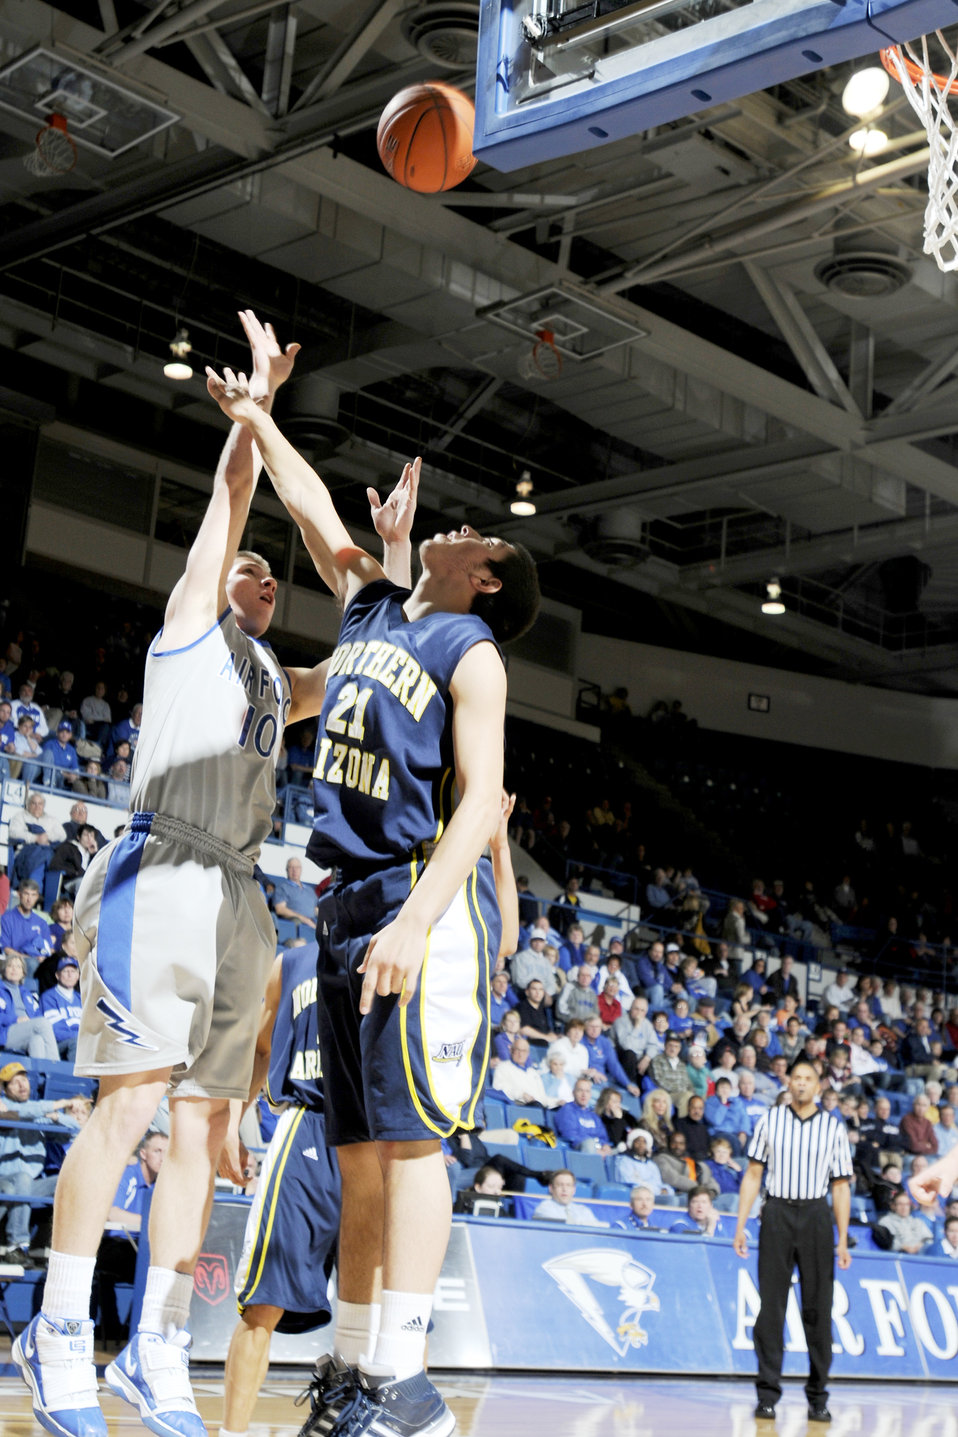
Falcons vs Northern Arizona

Falcon freshman guard Todd Fletcher takes a jumpshot as Lumberjack Stallon Saldivar tries to block his shot during the Falcons' game against Northern Arizona at the U.S. Air Force Academy's Clune Arena Dec. 19, 2009. Air Force lost the game 60-52. Fletcher contributed 11 points for the Falcons.